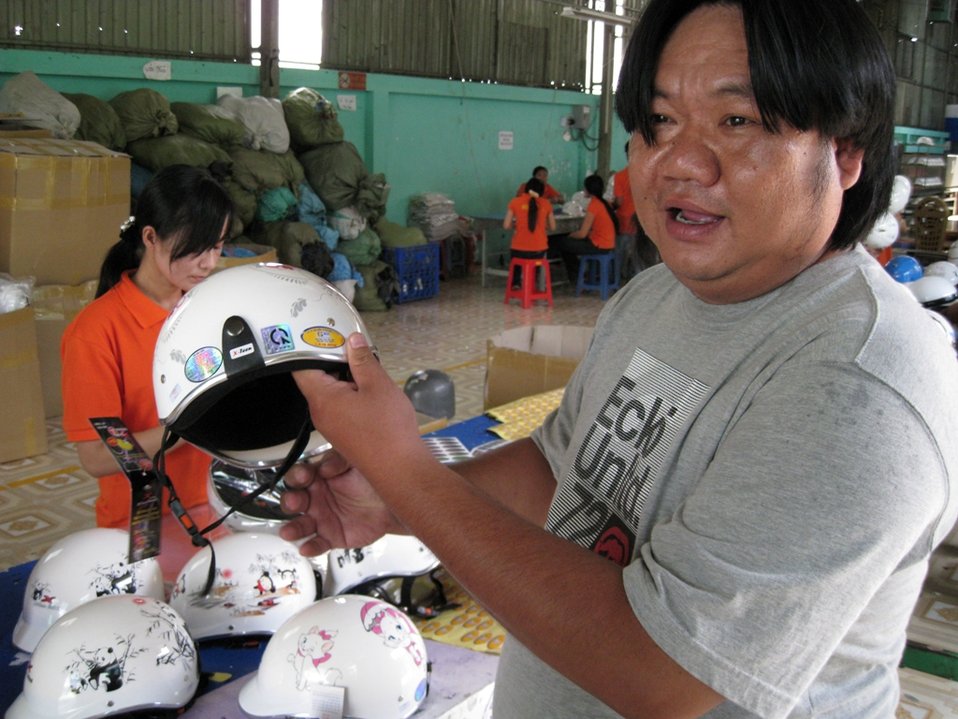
USAID supports standards for better business

Nguyen Hung, owner of a helmet factory in Ho Chi Minh City, shows the seals that sets his line of products apart from those without state safety certification. Standards have helped him compete better in local and regional marketplaces.